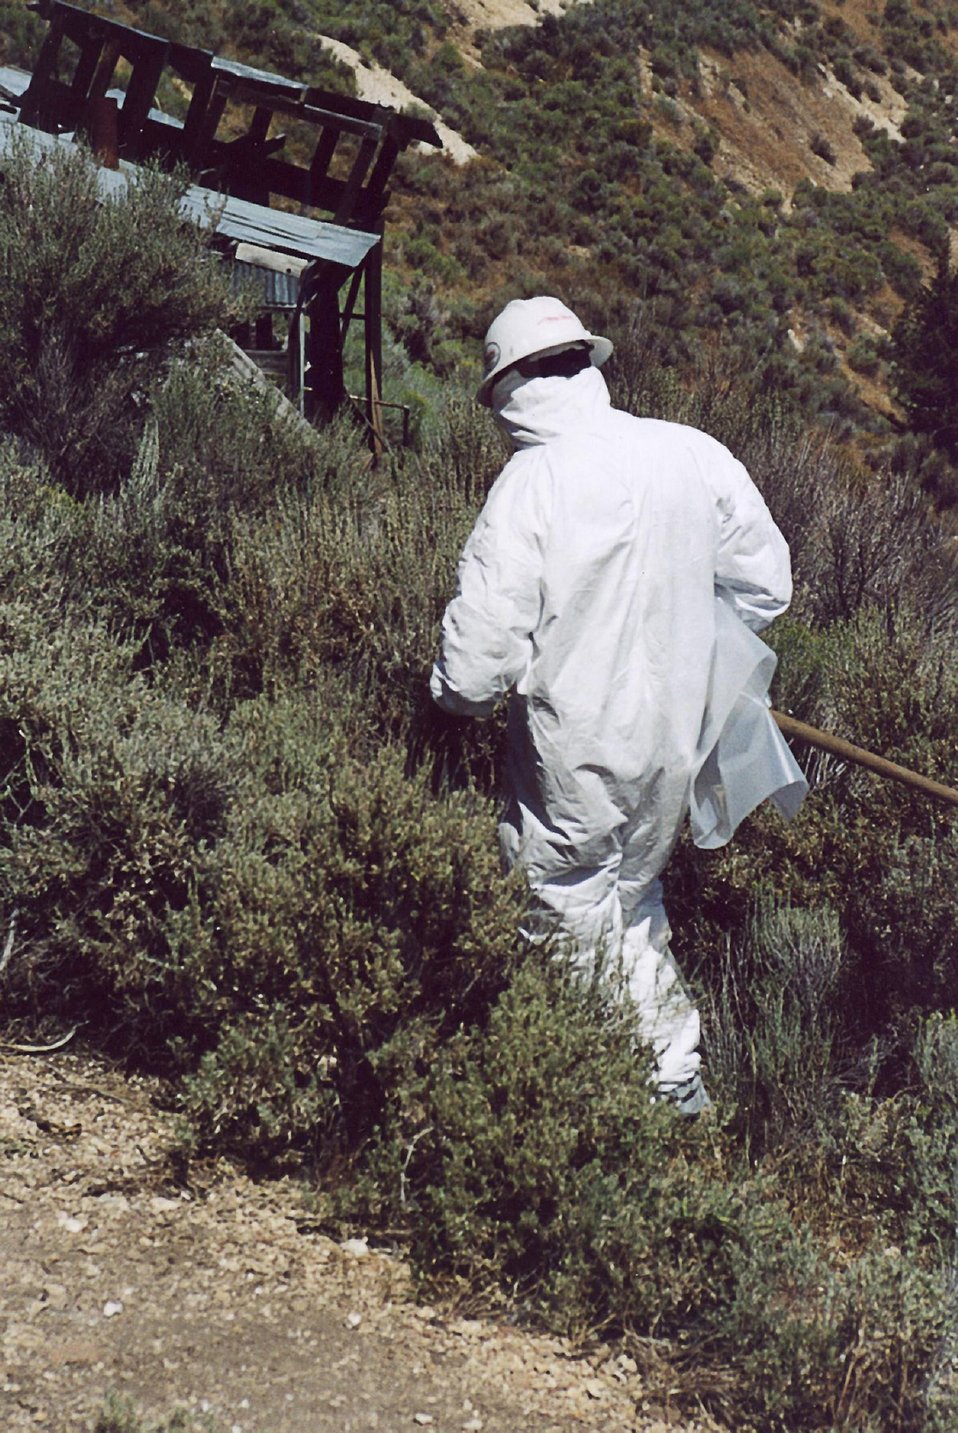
Glass Butte 4 Abandoned Mine Lands just before hazmat clean up. 8/22/02 Photo by Mark Armstrong